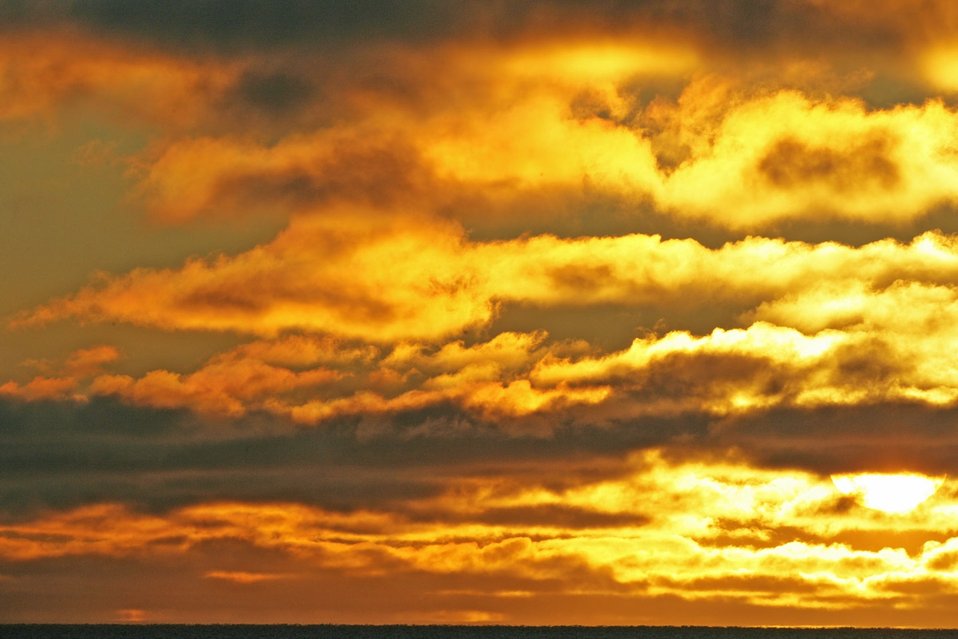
Sunrise in the Arctic.